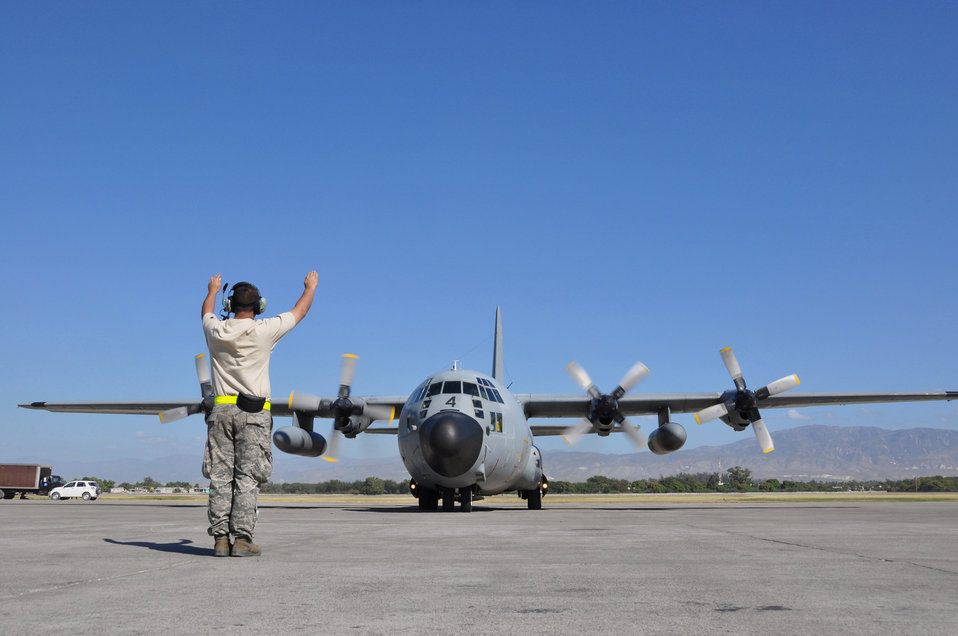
Airman sees Haiti scene unfold from under the brim of many hats

An Airman from the 621st Contingency Response Wing at Joint Base McGuire-Dix-Lakehurst, N.J., marshals an arriving C-130 Hercules bringing aid supplies to Toussaint L'Ouverture International Airport Jan. 30, 2010, in Port-au-Prince, Haiti. The rapid response wing provided manpower and expertise to operate the overwhelmed air-cargo movement system in the aftermath of a 7.0 magnitude earthquake that devastated most of the surrounding area, killing hundreds of thousands and displacing millions from their homes.